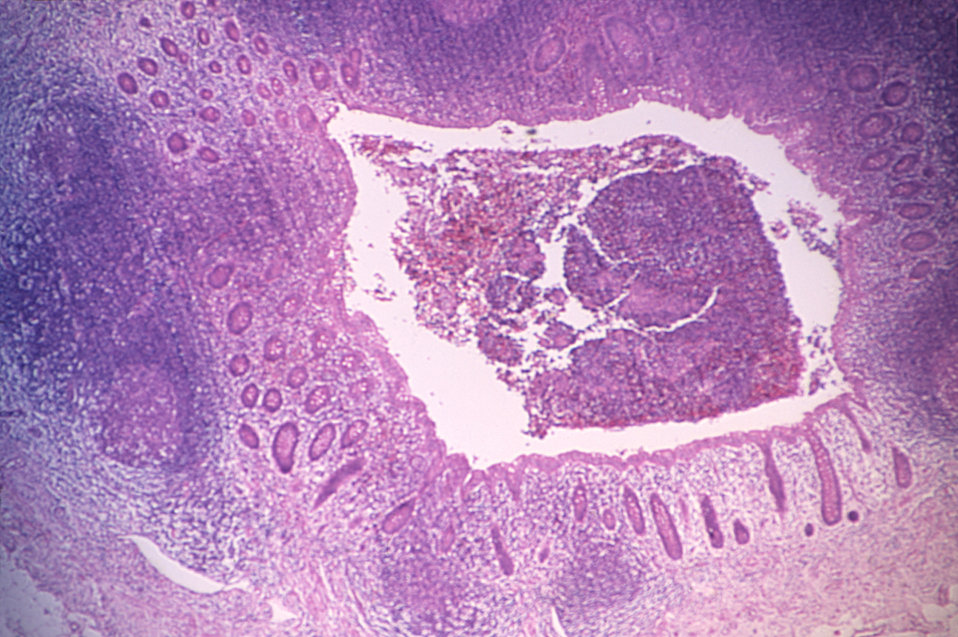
Histopathology of Taenia saginata in appendix. Parasite.